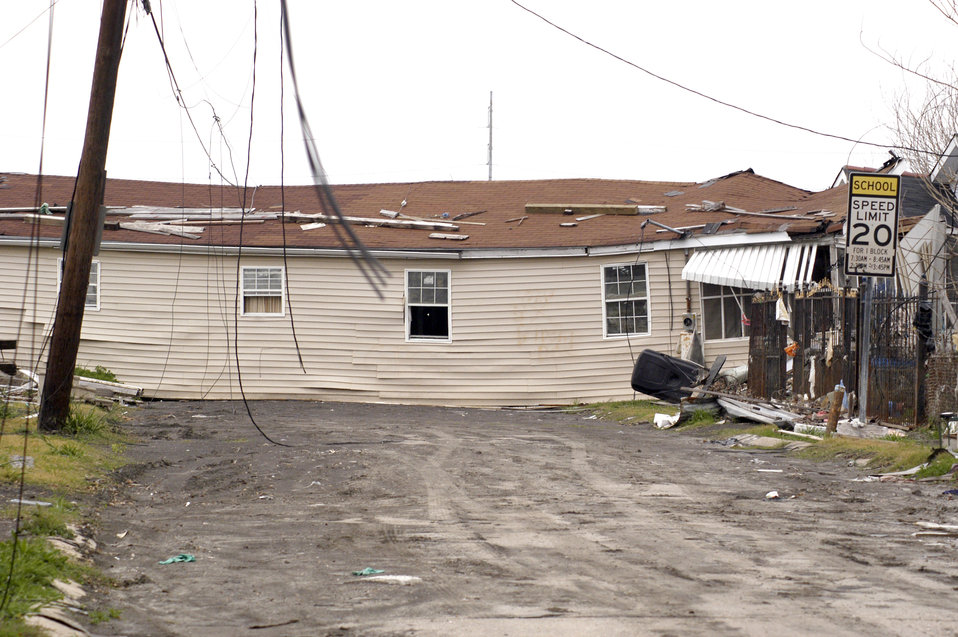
The 20-foot storm surge and resulting devastating flood from Hurricane Katrina washed a house off its foundation and blocked a street in St. Bernard’s Parish, LA. Katrina made landfall on Monday morning, August 29, 2005 as a Category 3 hurricane with sustained winds of 125 mph with over a 20-foot storm surge. Katrina caused catastrophic damage over 90 thousand square miles across Louisiana with an estimated $75 billion dollars in damage. The total economic impact to the Gulf Coast was estimated at over $150 billion. 80% of New Orleans, LA, was underwater with some areas more than 20 feet deep. Less than a month later southern Louisiana was struck by a second Category 3 hurricane Rita inflicting more damage in the southwestern areas of Louisiana adding an addition $12 billion worth of damage to the already beleaguered state. The U.S. Army Corps of Engineers (USACE) under the auspices of Federal Emergency Management Agency (FEMA) was the lead service in providing assistance to the citizens of Louisiana. The U.S. Department of Agriculture (USDA) supplied emergency food aid, emergency loan assistance to farmers and home owners, and USDA personnel from around the nation volunteered their time and muscle to aid in the recovery operations.